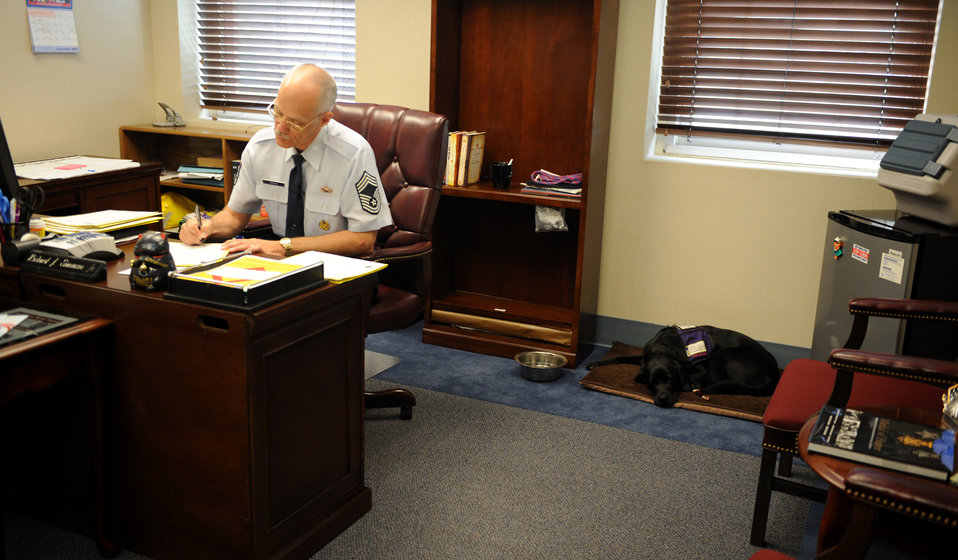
Chief discusses PTSD issues

Chief Master Sgt. Richard Simonsen works as the senior enlisted advisor on Joint Base Anacostia- Bolling in Washington D.C. He lives with Post Tramatic Stress Disorder (PTSD) a condition he endured from a deployment to Afghanistan last year. Yoko, his service dog, helps him with his day to day activities.